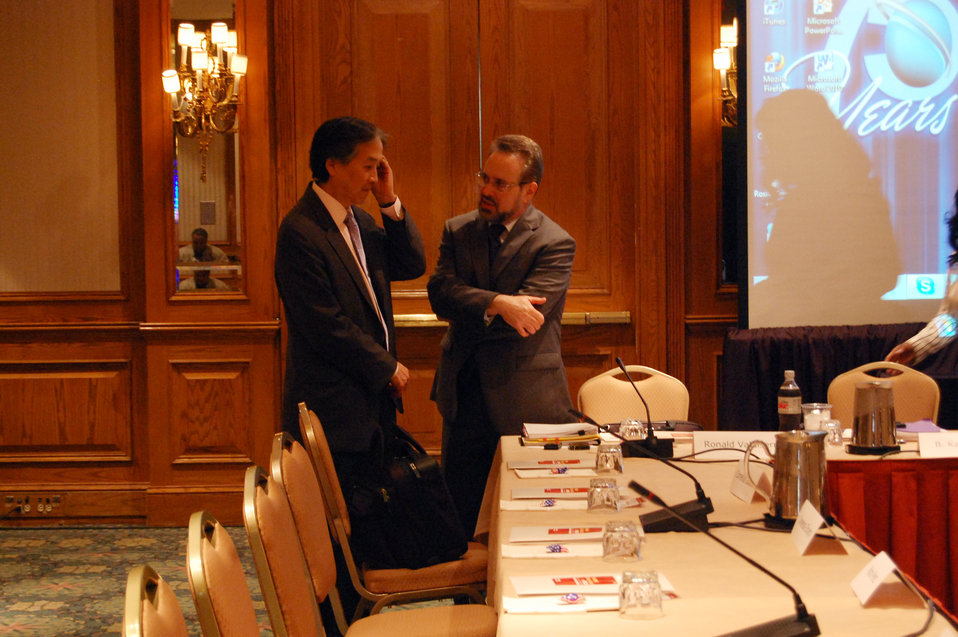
PACHA conf020